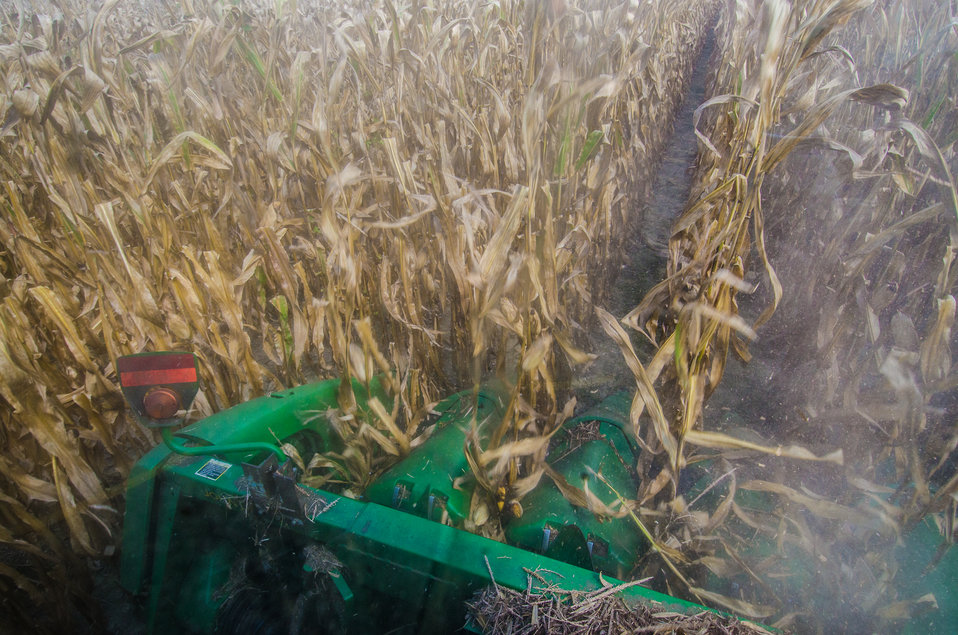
The view out of the operators cab of a corn harvester as corn stalks are cut and the kernels and cornstalks separated during the harvest on Friday, Sept. 20, 2013 harvest, at the John N. Mills & Sons farm; a family owned business located in the Hanover and King William Counties of Virginia. Pleasant Level Farm was the original farm and a Land Grant from King George III of England to Nicholas Mills in 1725. The original acreage has never left the Mills family name and continues to be farmed by the family. Now the farm covers 5,744 acres that produce corn, wheat, soybeans, barley, hay and timber, and pastures a large herd of beef cattle. They have been using conservation and stewardship practices since the 1960s. Some of the efficient practices include no-till planting methods and cover crops to reduce soil erosion and prevent the leaching of nutrients into ground water, as well as livestock stream exclusion. The farm has several conservation easements that aids in the preservation and restoration of wetlands and waterways. For information about the U.S. Department of Agriculture (USDA), please go to www.usda.gov.